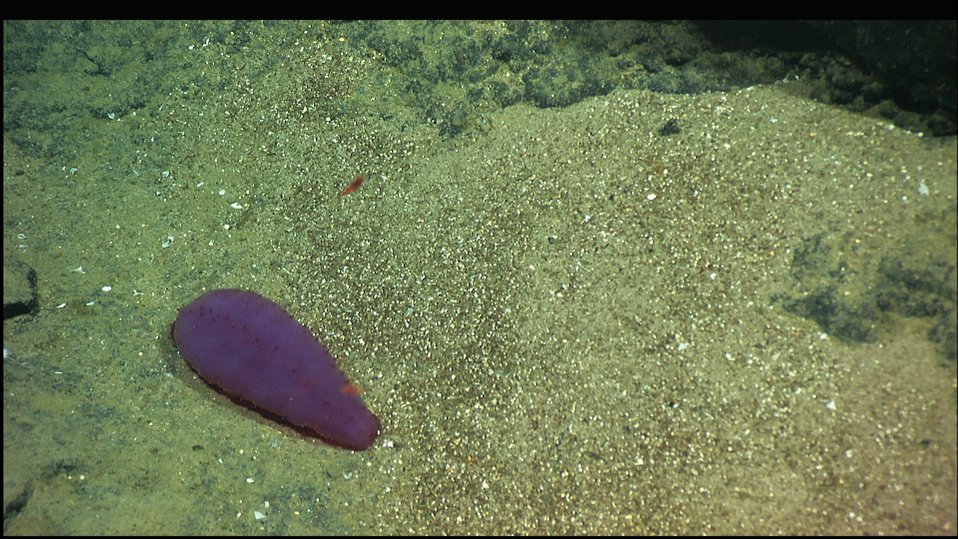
A weird purple holothurian (sea cucumber). Dive 15.